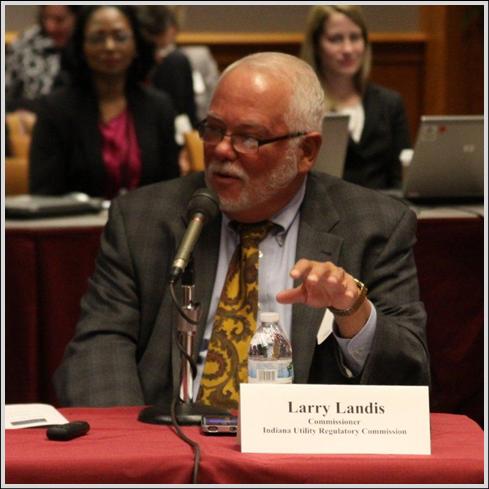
Commissioner Larry Landis, Indiana Public Service Commission

Moderating Panel 4: Discussion of Industry Best Practices to Increase Broadband Adoption Among the Various Technologies